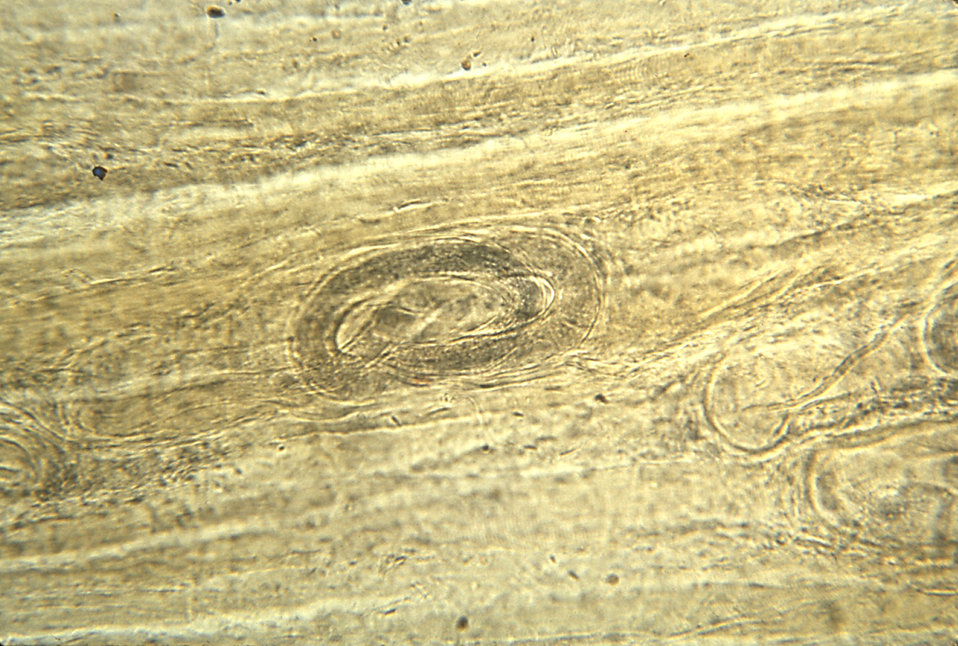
This micrograph reveals a developing Trichinella cyst within human skeletal muscle tissue.